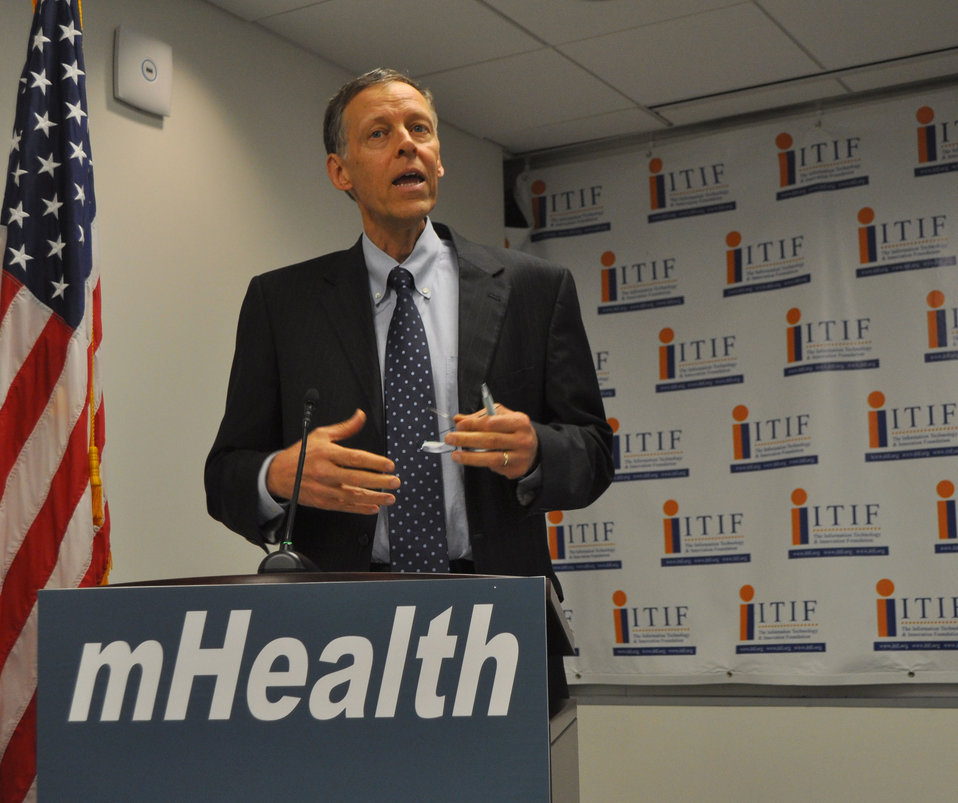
mHealth Task Force Findings and Recommendations Event - DSC 0657